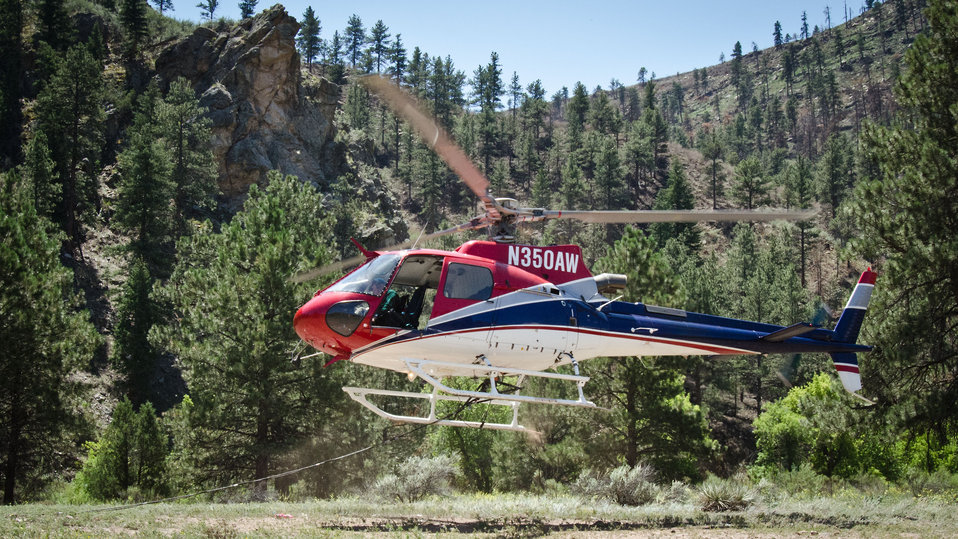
Mountain Air Chief Pilot Tim Booth takes off after refueling his helicopter on Friday, July 20, 2012, at Seaman Reservoir, near Fort Collins, Colo., during the continuing aerial application of straw to mitigate soil and ash runoff from the mountainous terrain leading to Seaman Reservoir, drinking water resource for the City of Greeley. The A-Star Model B (3-blade rotor) aircraft will dangle a 100-foot cable over a load crew at the reservoir spillway. He will then lift an approximately 1,400 pound load of certified straw for aerial dispersal onto barren, burned out tributary lands surrounding the reservoir. Forest service lands received straw, while private and other lands receive a seed mix and straw to promote ground cover plant growth on ash-covered lands. In total, 1,800 tons of straw will be applied during the 14-day operation. One quarter of the cost was paid by the City of Greeley and the U.S. Department of Agriculture funded the remainder. The Hewlett Gulch Fire was started by a camper’s alcohol stove, on May 14, at the saddle of a picturesque mountain ridge along the Hewlett Gulch Trail of Poudre Canyon, in the Roosevelt National Forest, 60 miles north of Denver. At it’s more than 400 firefighters were battling fires being pushed by 50 mph winds that helped blacken over 12-square-miles of dry ground cover, brush and trees. Many of the trees were already dead and tinder dry from beetle-kill. The water in the reservoir remains clean and clear, while downstream water flow has gone from famous Colorado clear water to nearly black flows of water heavily laden with ash, silt, and burnt debris that recent thunderstorms have already washed down from the mountainsides.